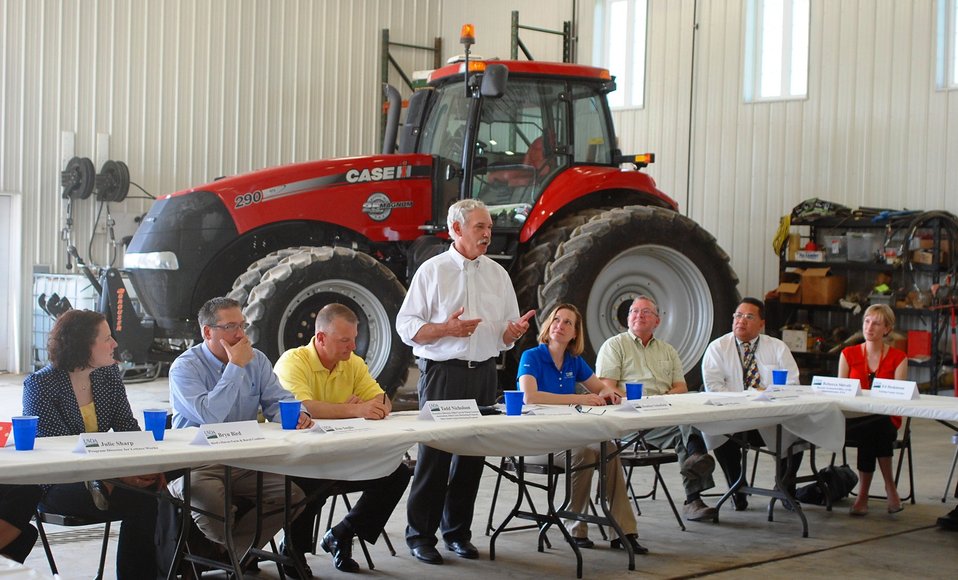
Agriculture Acting Deputy Secretary Michael Scuse hosts a roundtable discussion with Ohio FFA and 4-H in Licking County, OH on Thursday, May 30, 2013.